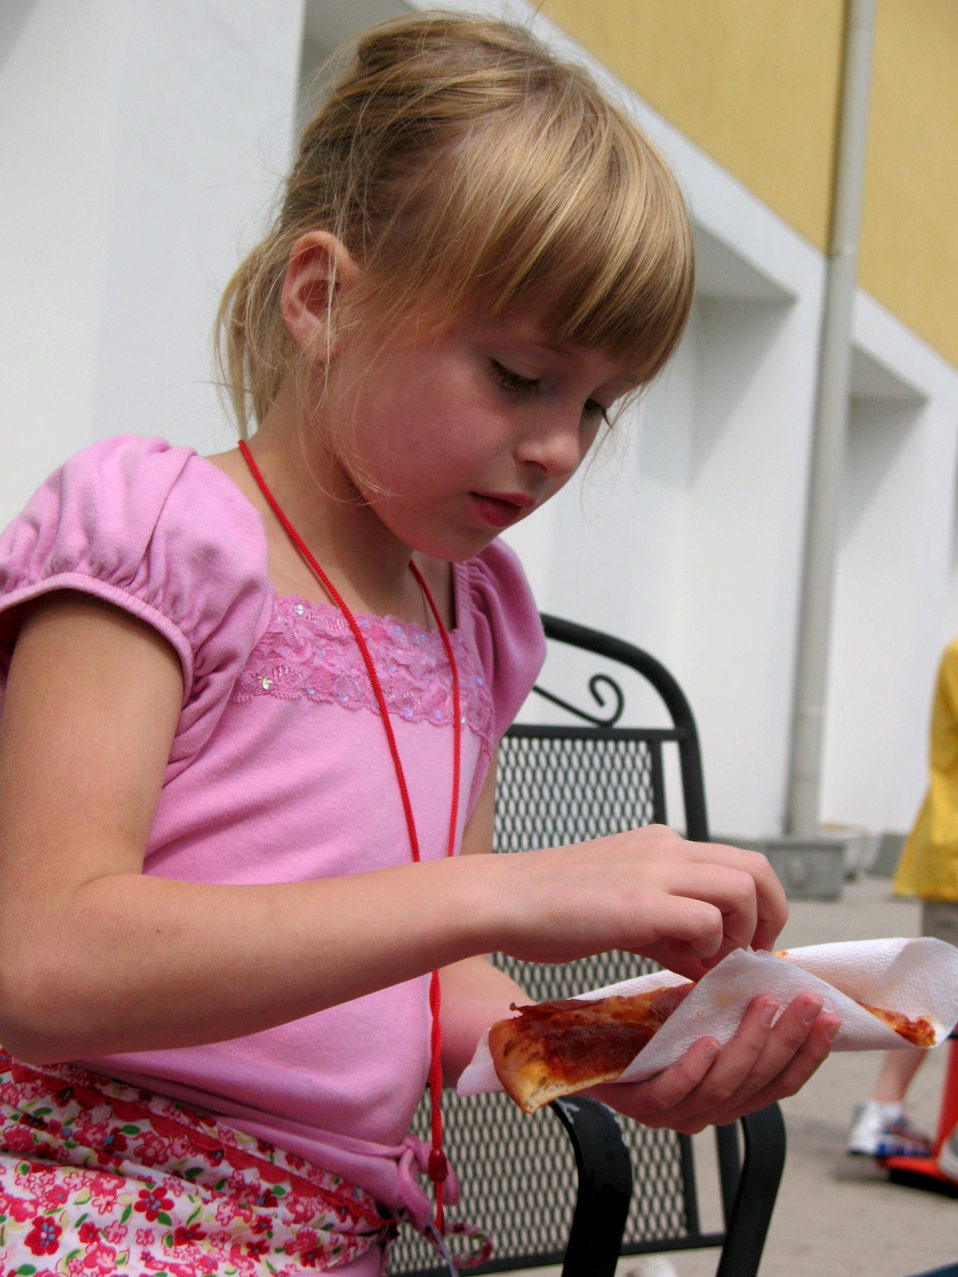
Teachers recognized for dedication to children of deployed Airmen

First-grader Julian George enjoys a slice of pizza at the final meeting of Aviano's Elementary School Deployment Club. While the children ate their pizza, they talked with other children who had a parent deployed. The club is a means for the children of deployed Aviano Airmen to interact with one another.